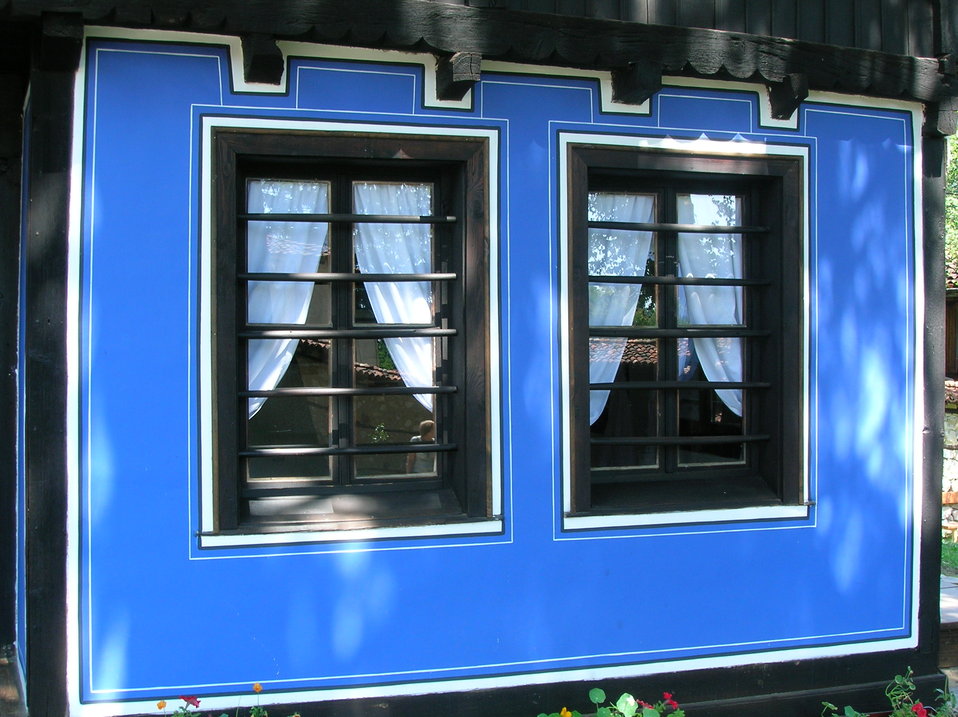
Debelyanov House, in Koprivshtitsa (Bulgaria). Fran√ßais†: Maison Debelyanov, √† Koprivchtitsa (Bulgarie).